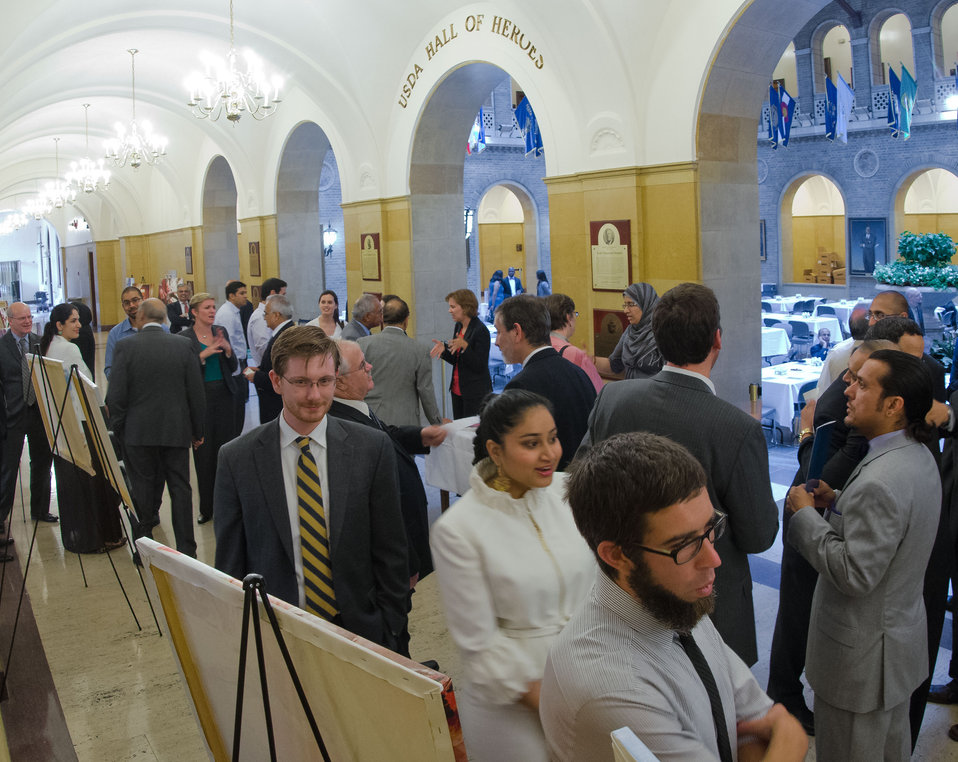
Guests meet each other outside the patio and had an opportunity to view Ridwan Adhami's photography exhibit 'Scars and Smiles' at theIftar event, co-sponsored by the Iftar celebration, co-sponsored by the U.S. Department of Agriculture, U.S. Agency for International Development (USAID) and Islamic Relief USA, on Tuesday, August 7, 2012, in the USDA Whitten Building, in Washington, D.C. Ramadan is the month of fasting, intensive prayer, sacrifice and worship for Muslims around the world. Throughout this month, Muslims fast during the day, abstaining from consuming food from dawn to dusk and using this time to purify spiritually. Fasting reminds Muslims of the poverty and hunger suffered by many in the United States and worldwide. It is a connection with those who are hungry not through devotion, but through the many global factors that lead to hunger and famine. Iftar is the meal at which Muslims break their fast at sunset, usually by eating dates, according to the Prophetic tradition.